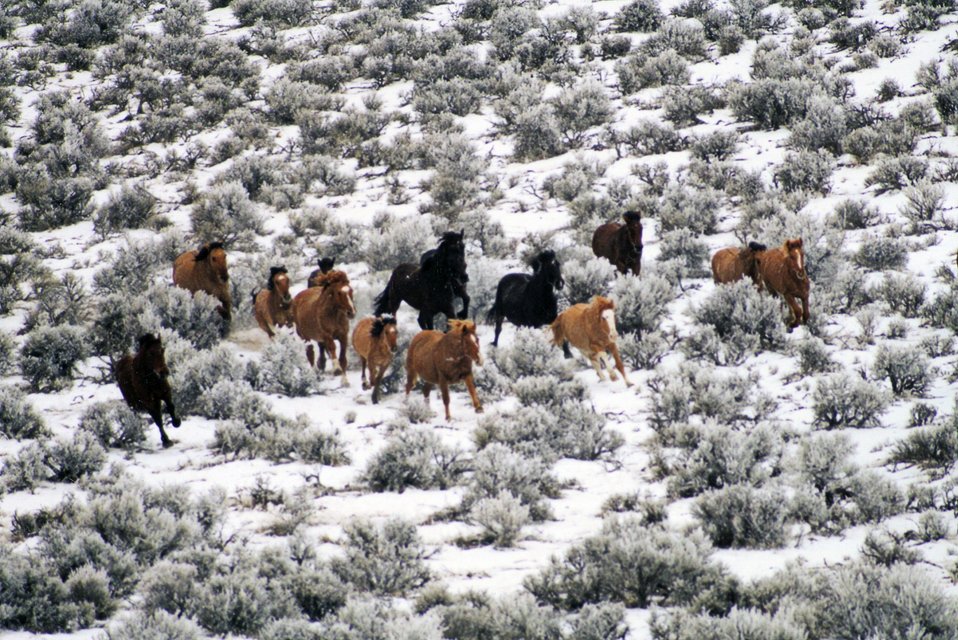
Alvord-Tule Wild Horse Management Heard Area.